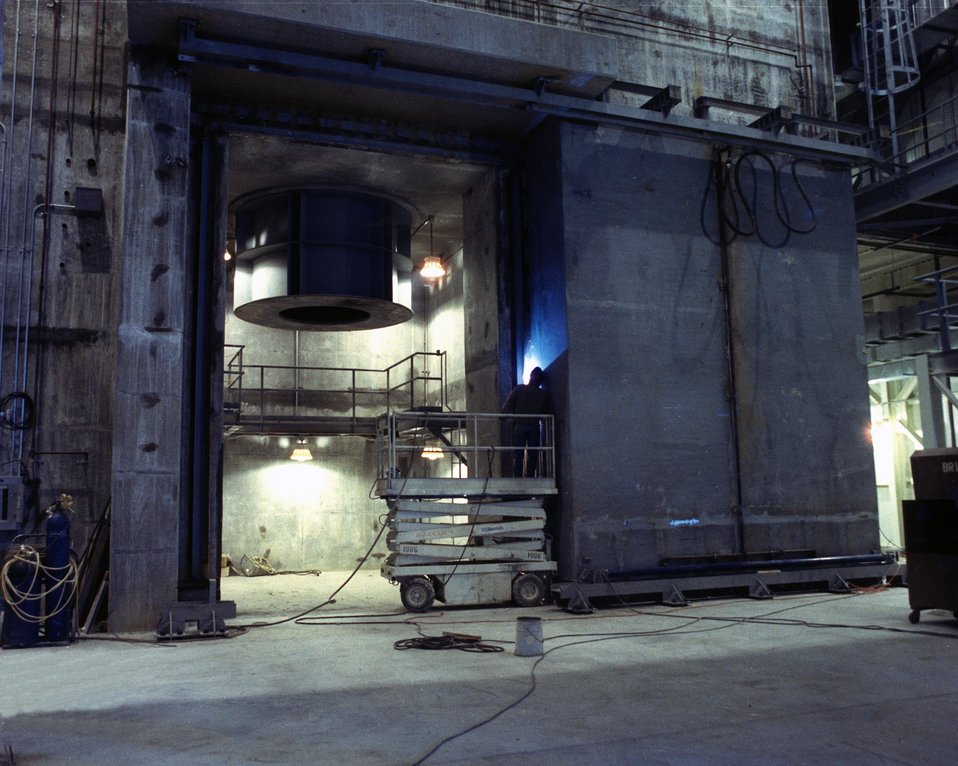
REMOTE HANDLING RECEIVING AREA IN THE WASTE HANDLING BUILDING.

THE WASTE ISOLATION PILOT PLANT IS A DOE RESEARCH AND DEVELOPMENT FACILITY FOR DEMONSTRATING THE SAFE DISPOSAL OF TRANSURANIC RADIOACTIVE WASTES. TEST SHAFTS HAVE BEEN DRILLED TO A DEPTH OF 2,100 FEET. THE SHAFTS, ONE 6 FEET IN DIAMETER AND THE OTHER 12 FEET IN DIAMETER, PROVIDE AN ENTRY PASSAGE AND VENTILATION TO THE UNDERGROUND SALT ROCK FORMATION THAT IS BEING TESTED TO DETERMINE ITS SUITABILITY FOR RADIOACTIVE WASTE STORAGE.